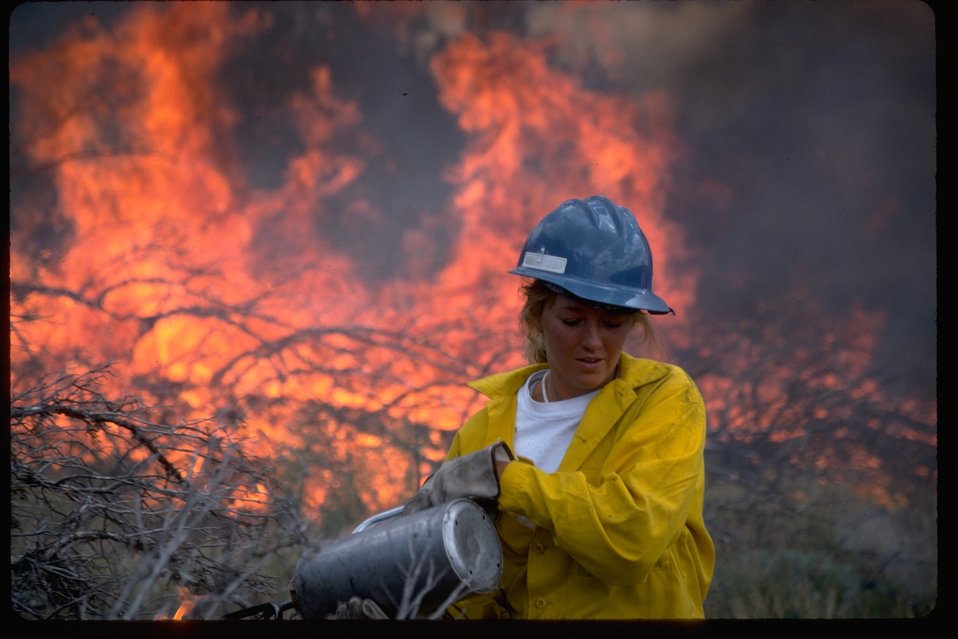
Fire School.